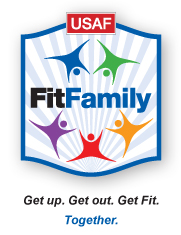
FitFamily is an Air Force program that encourages families to